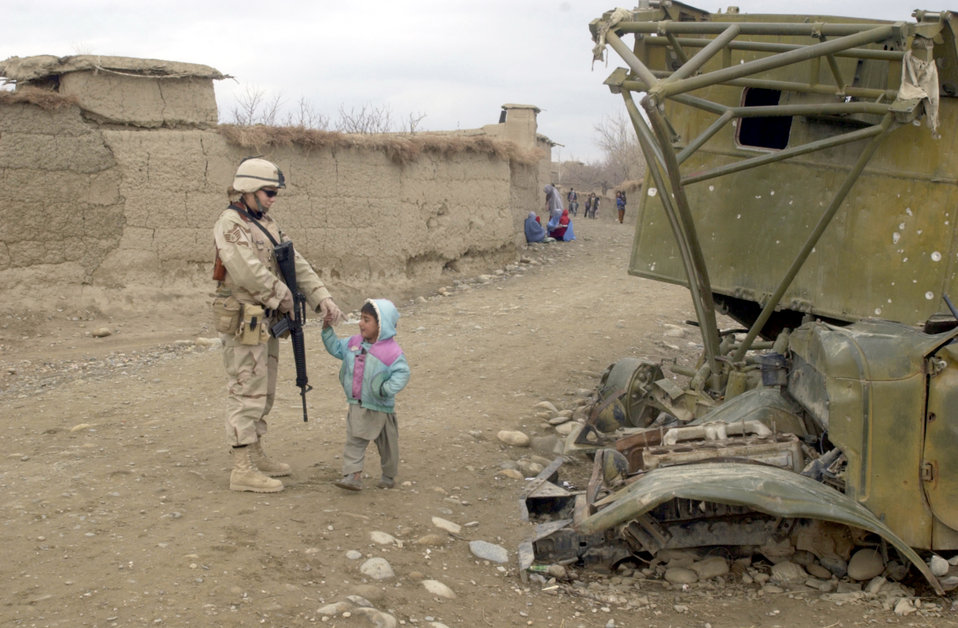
Adopt a Village

JANGADAM VILLAGE, Afghanistan -- Staff Sgt. Crystal Whittaker visits with an Afghan child here while providing perimeter security during the 455th Expeditionary Operations Group's delivery of humanitarian supplies Dec. 31. Whittaker is a security specialist with the 455th Expeditionary Operations Group.